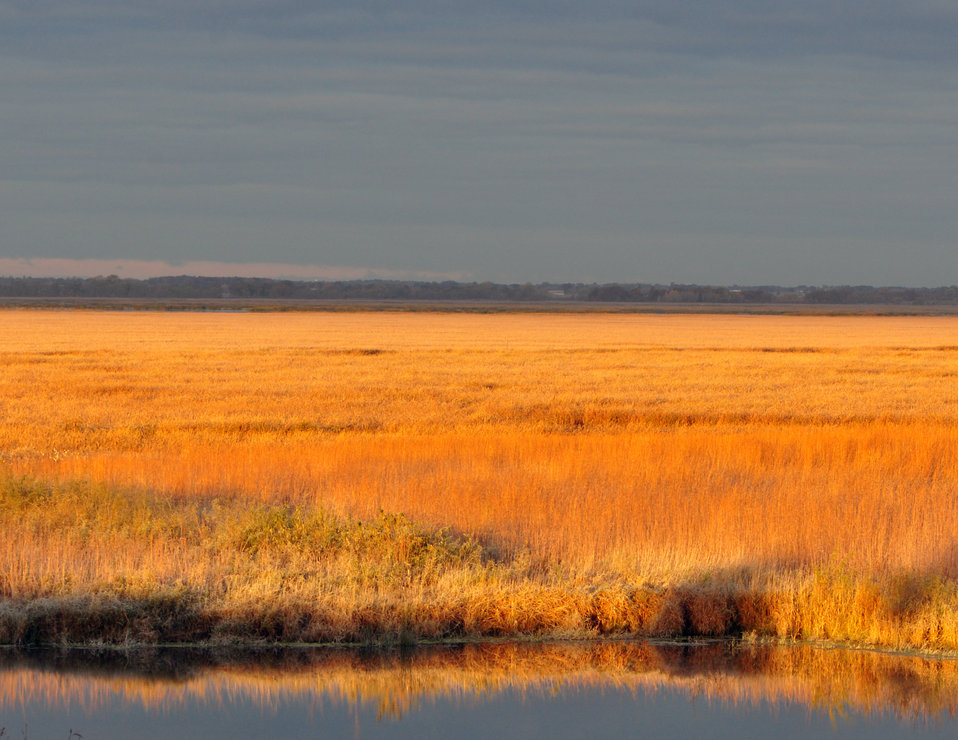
Marsh of Gold - Horicon National Wildlife Refuge

A fleeting moment captured forever: the morning sun lights up Horicon National Wildlife Refuge's marsh in gold.

Photo: Marsh of gold by Rachel Samerdyke/USFWS.